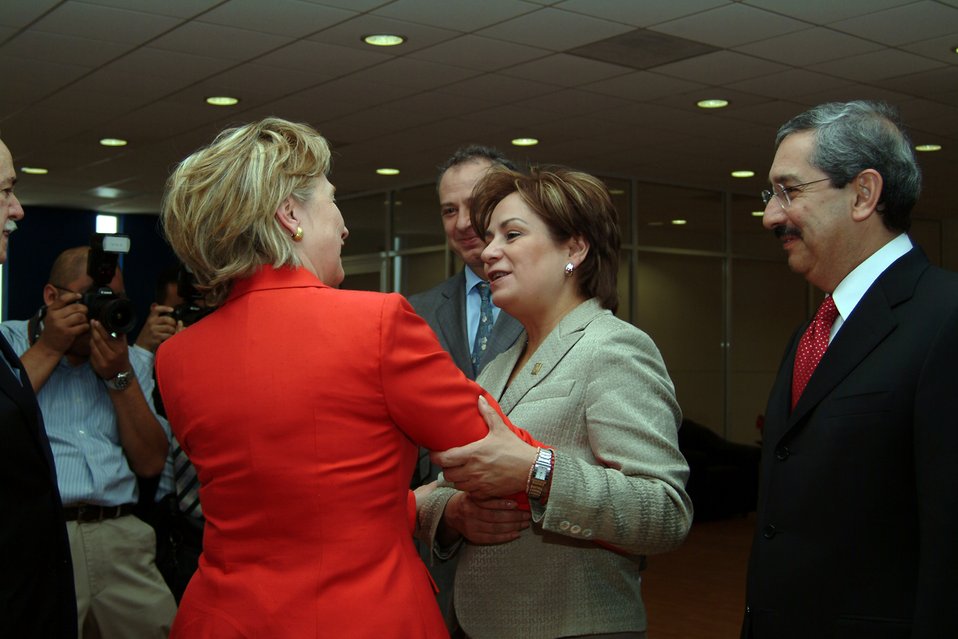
Secretary Clinton at TecMilenio University

U.S. Secretary of State Hillary Rodham Clinton at TecMilenio University in Monterrey, Mexico March 26, 2009.